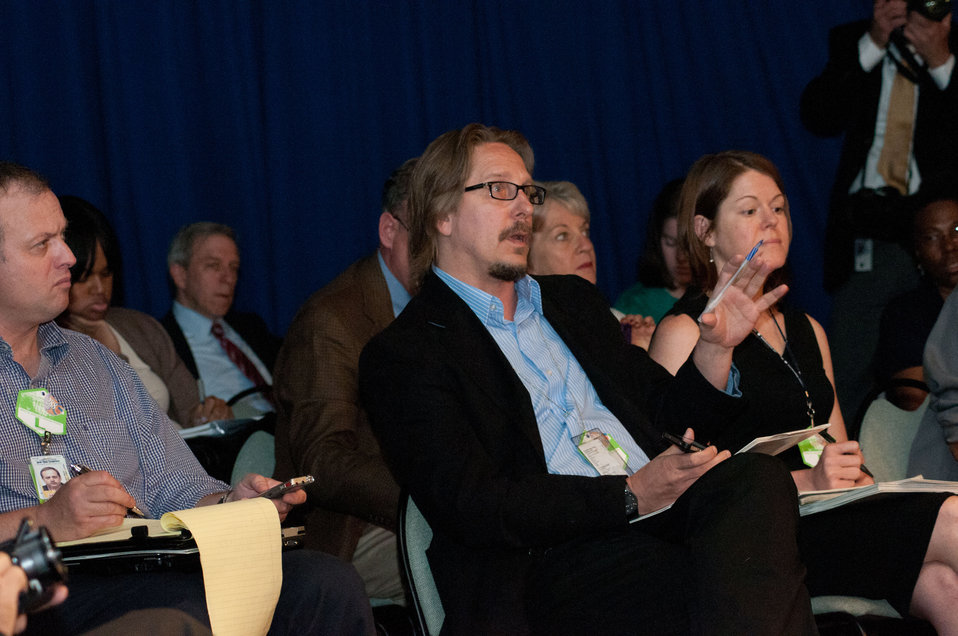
A reporter asks Agriculture Secretary Tom Vilsack a question at a news conference at the announcement of the new food icon MyPlate at the U.S. Department of Agriculture in Washington, D.C. on Thursday, June 2, 2011. MyPlate is an easy-to-understand visual cue to help consumers adopt healthy eating habits that are consistent with the 2010 Dietary Guidelines for Americans.